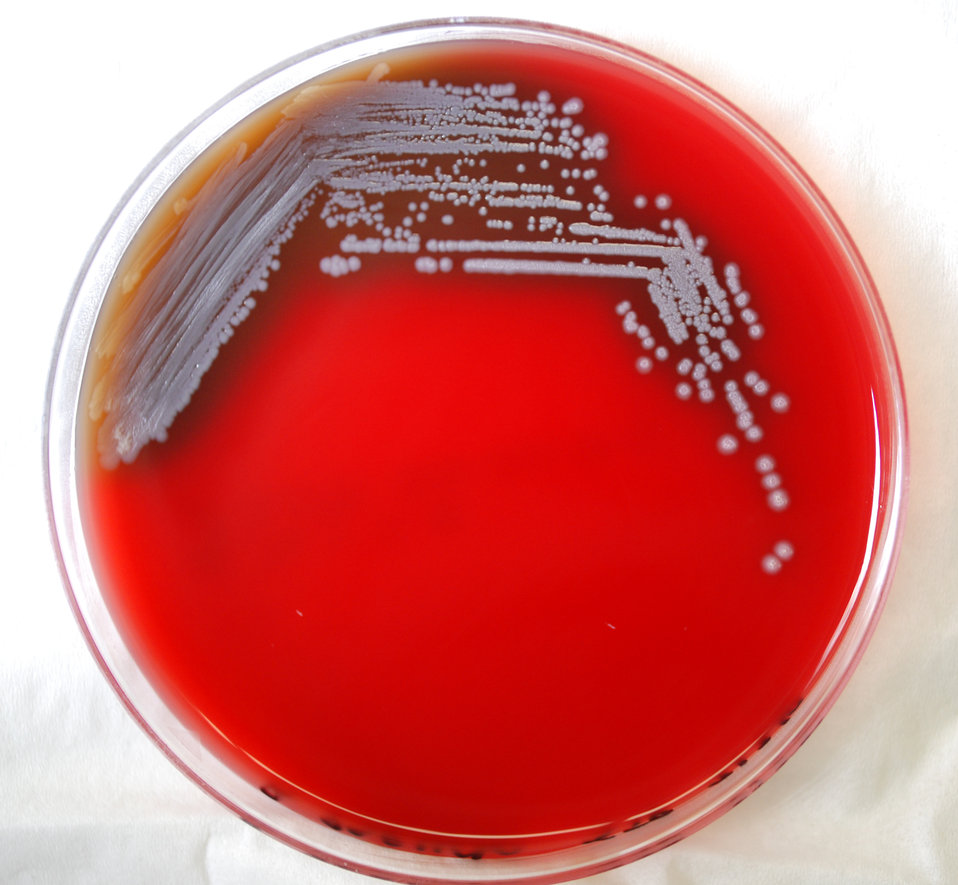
This photograph depicts the colonial morphology displayed by Gram-negative Burkholderia pseudomallei bacteria, which was grown on a medium of sheep's blood agar (SBA), for a 48 hour time period, at a temperature of 37�C. For a closer look at these colonies, see PHIL 12255.